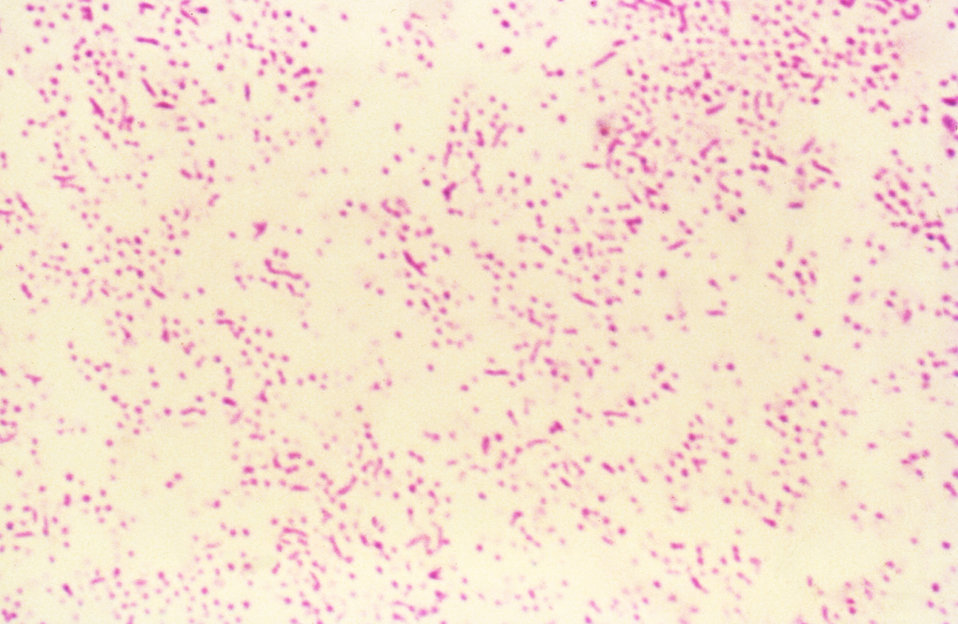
This Gram-stained micrograph revealed coccoid forms of Campylobacter jejuni acquired from a 72 hour culture using discrete bacterial colonies that had developed upon a brain-heart infusion agar plate with the addition of 7% rabbit blood.